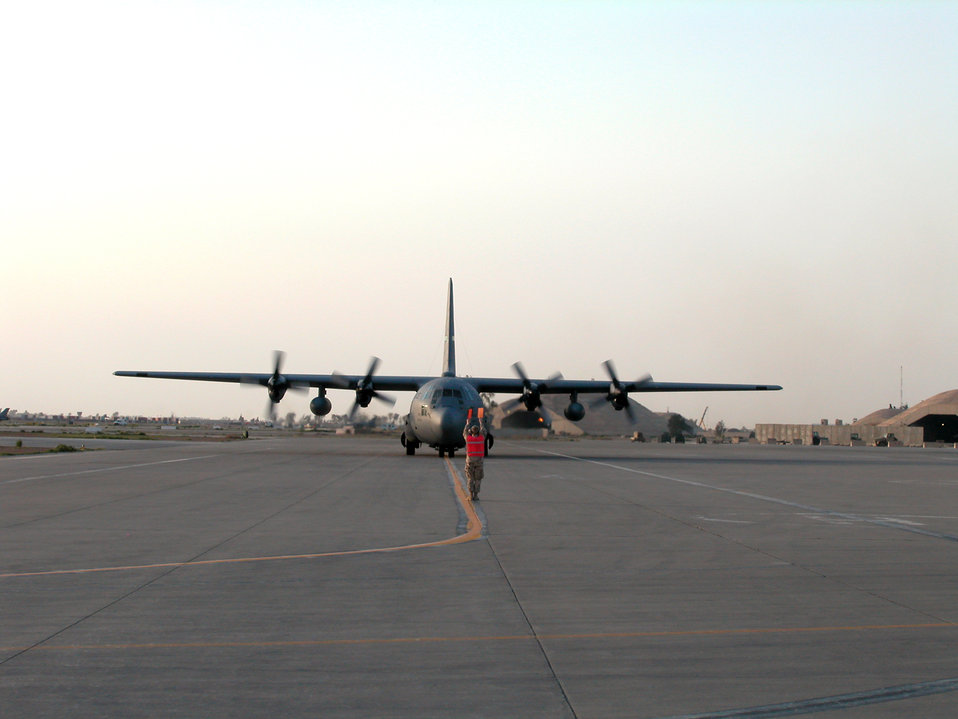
Transient alert maintainers provide critical mission support

Airman 1st Class Richard Rump marshals an arriving C-130 Hercules to its designated parking spot March 20 at Balad Air Base, Iraq. Airmen from the 332nd Expeditionary Maintenance Squadron's transient alert section handle about 3,000 aircraft a month.